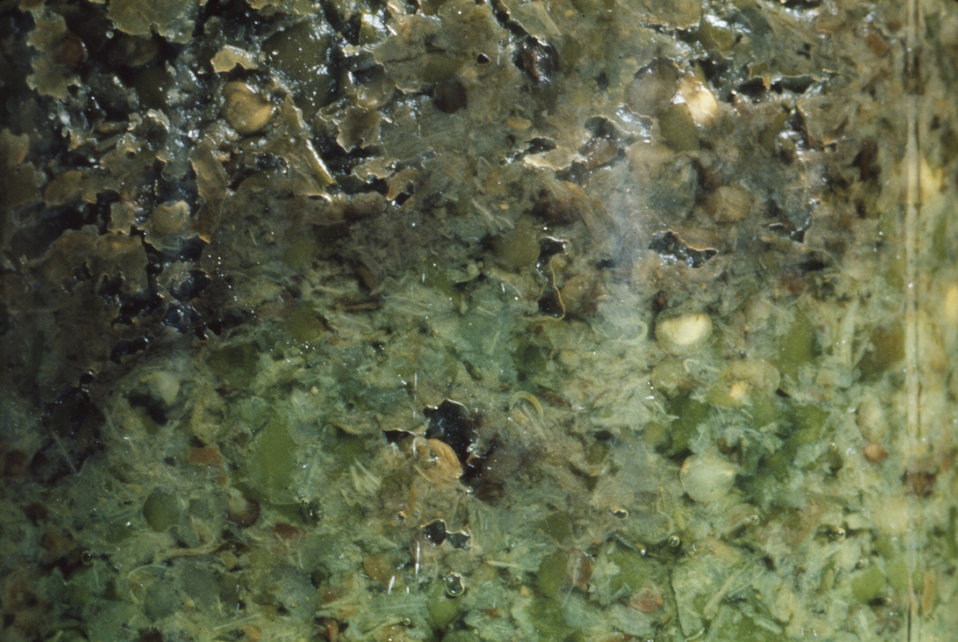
This is a close up of contaminated Jalape�eppers involved in an outbreak of botulism in Pontiac, Michigan, April, 1977.